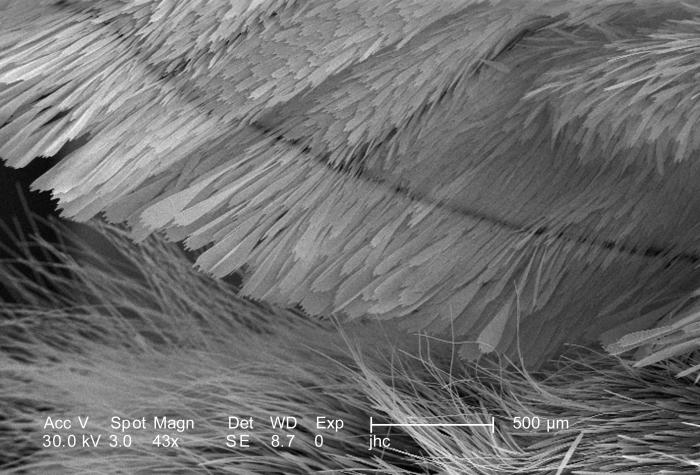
This scanning electron micrograph (SEM) depicted a region of the exoskeletal surface of an unidentified white moth, which was found deceased on the ground in Decatur, Georgia. Under this low magnification of only 43X, you'll note the presence of numerous 'scales', which are actually outcroppings of the surface, and are composed of the same material, a durable substance known as 'chitin'. Notice how the length of the scales increases as their location changes moving out towards the periphery of this region. Also visible were numerous 'hair-like' structures known as 'setae', which are sensorial in nature, and are not hair in the mammalian sense, but like the scales, are composed of chitin.